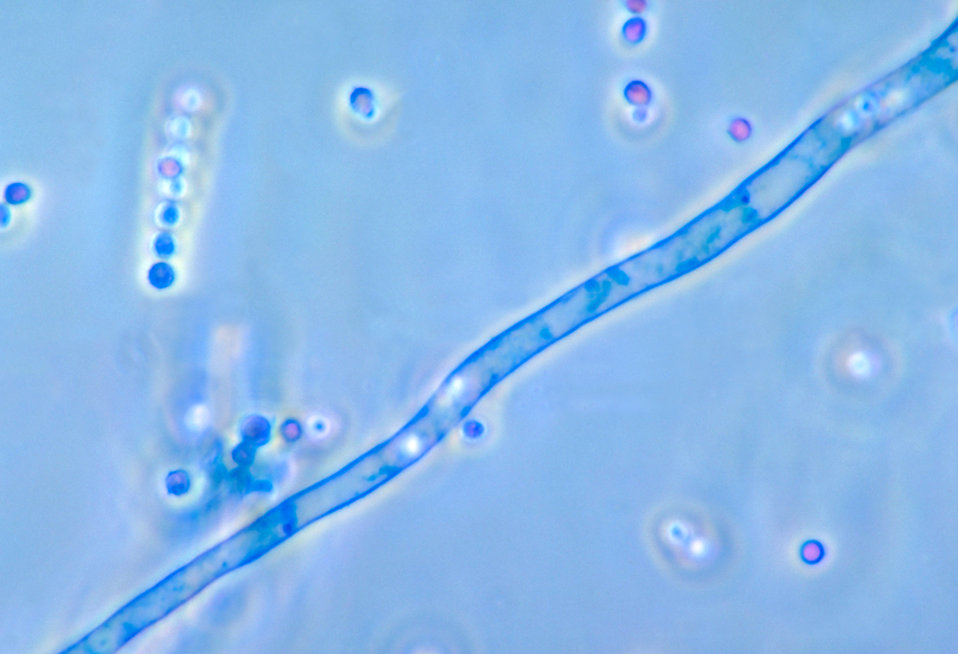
This photomicrograph reveals a conidiophore filament of the fungus Aspergillus fumigatus.